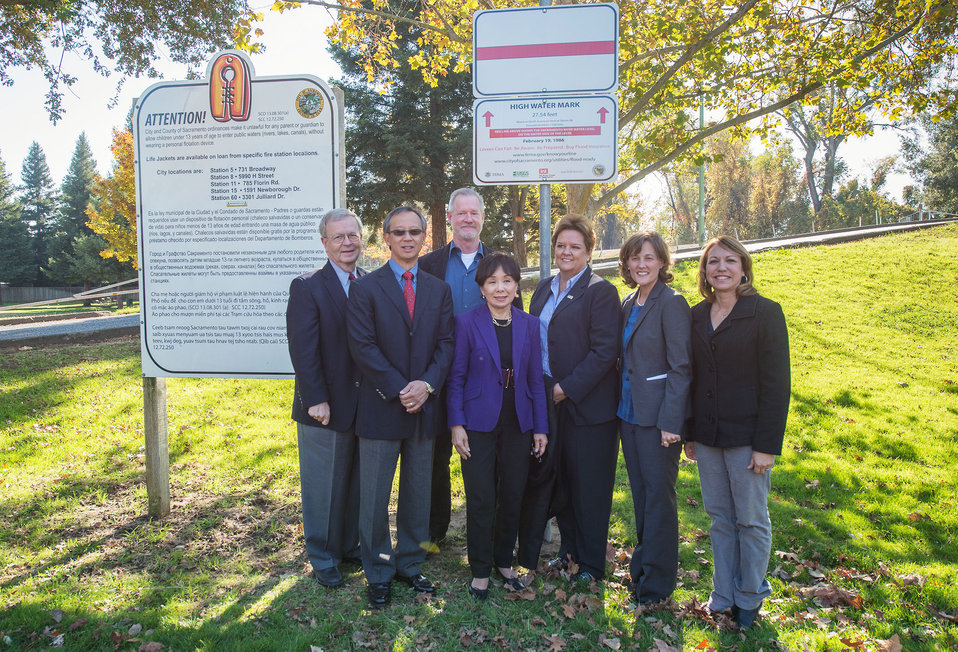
Corps supports Sacramento high water mark event

Local, state and federal officials stand near a new high water mark sign at Garcia Bend Park in Sacramento, Calif., Nov. 8, 2013. The sign marks the highest known elevation of the Sacramento River, and how high floodwater would’ve been in the park if the levee had failed. The event was hosted by the cities of Sacramento and Roseville to increase flood awareness and preparedness in the region. Speakers at the event included (from left) City of Sacramento Councilmember Darrell Fong; Central Valley Flood Protection Board President Bill Edgar; California Department of Water Resources Division of Flood Management Chief Keith Swanson; U.S. Rep. Doris Matsui representing California's 6th Congressional District; Federal Emergency Management Agency FEMA Region IX Regional Administrator Nancy Ward; U.S. Army Corps of Engineers Sacramento District’s Deputy District Engineer for Programs and Project Management Tambour Eller; and City of Roseville Vice Mayor Carol Garcia.